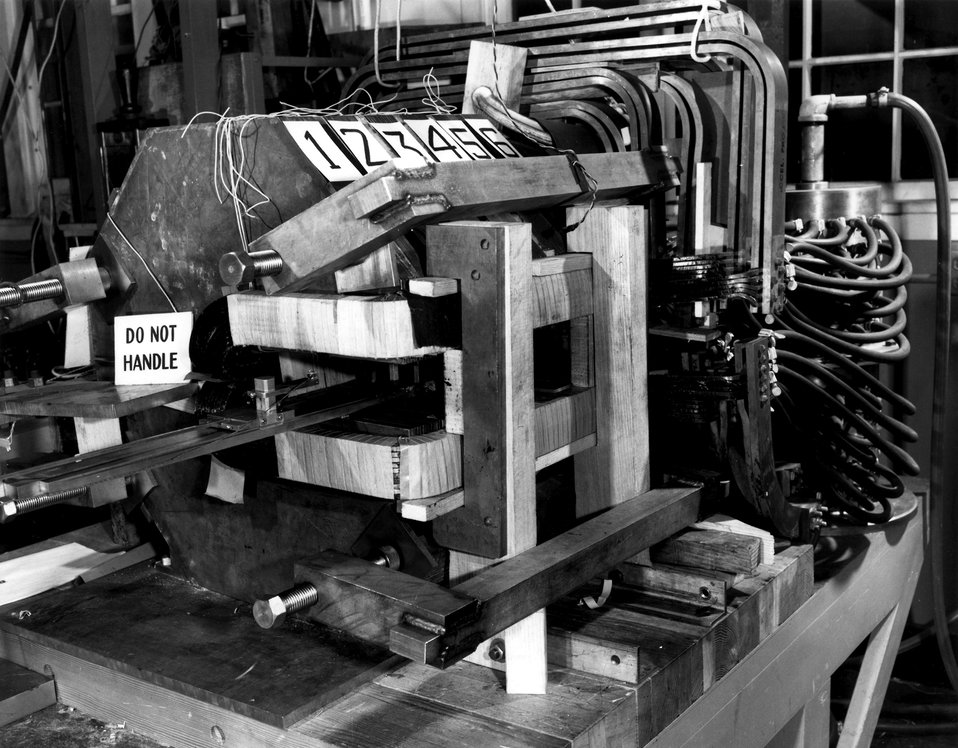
Quarter scale model - Mark III of Cosmotron magnet set-up for strain gauge measurements.